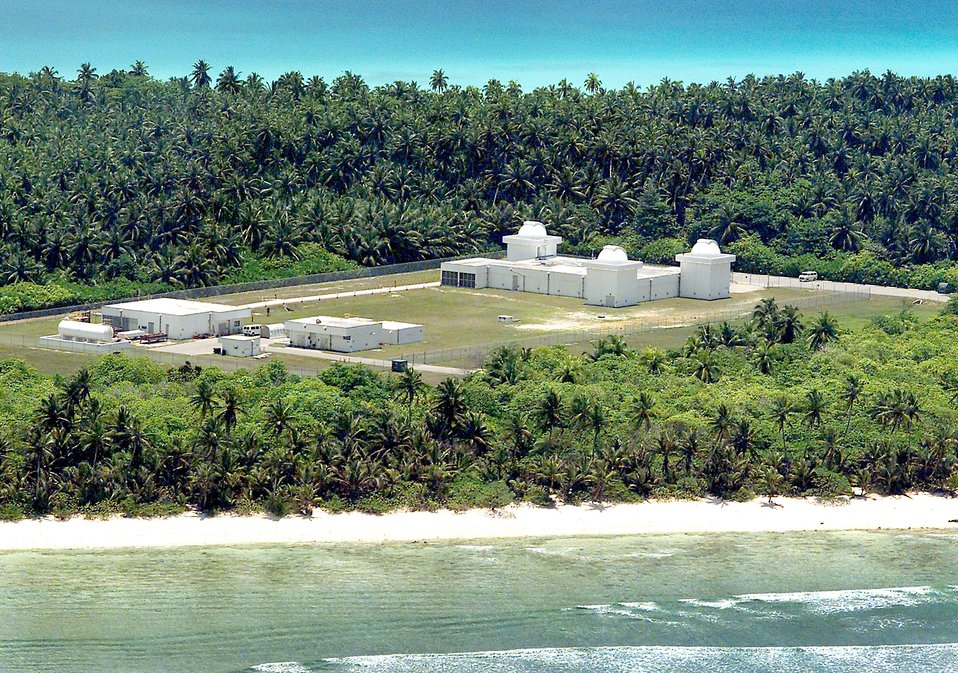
Trackers watch for dangerous 'space junk'

The Ground-Based Electro-Optical Deep Space Surveillance System facility in Southwest Asia is one of three operational sites worldwide. Specialists at the three sites track known man-made deep space objects in orbit around earth.